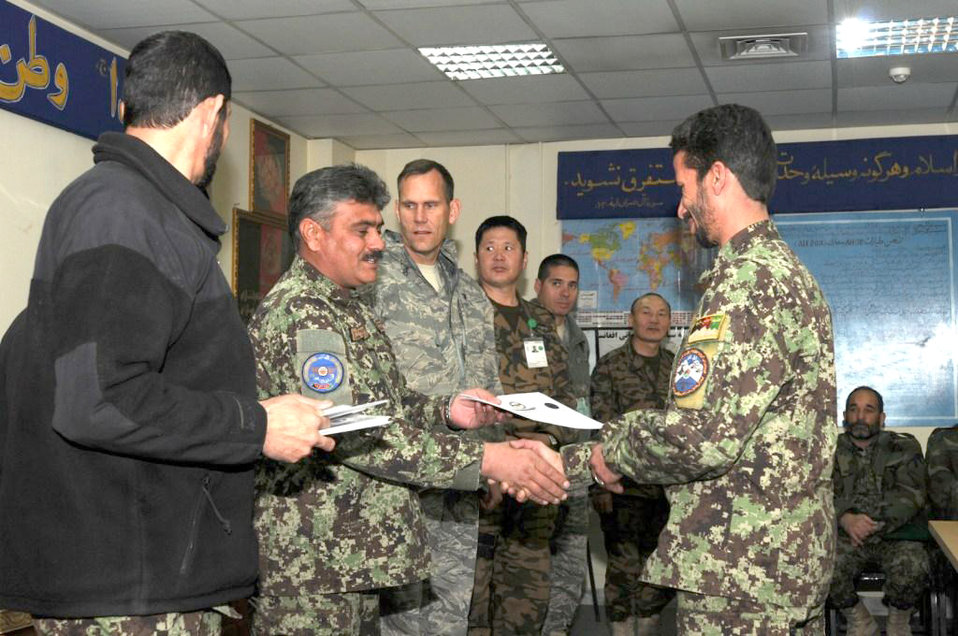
Afghan air force airmen first to graduate Mi-17 maintenance course

An Afghan air force airman receives a certificate for graduating from the Mi-17 helicopter engine and body maintenance course Jan. 1, 2011, at the Afghan Air Force Base in Kabul, Afghanistan. The graduates became the first airmen to complete the course.